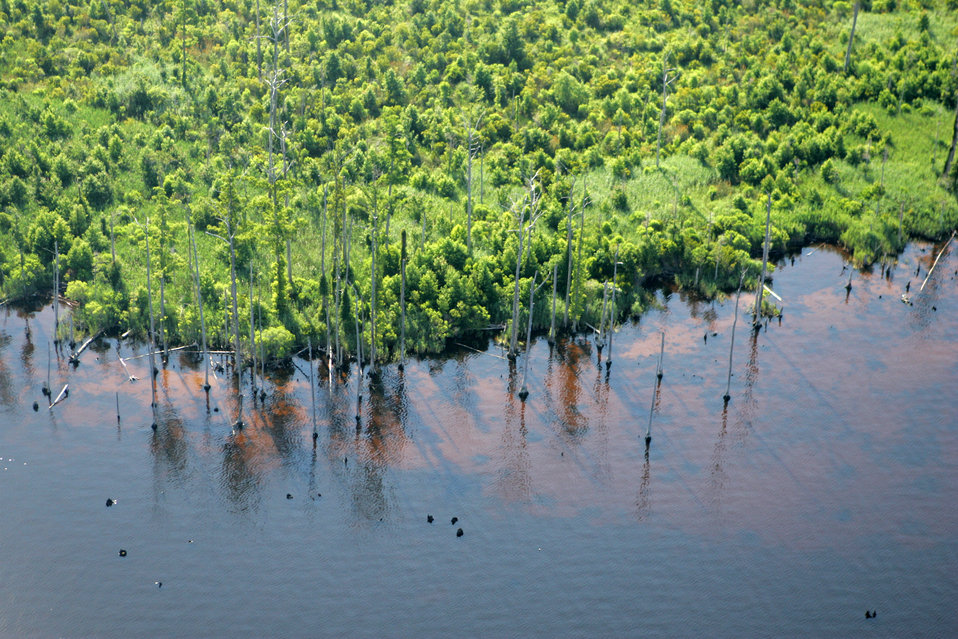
Aerial of too much water at Alligator River

Too much water from the Alligator River on the west side of the Alligator River National Wildlife Refuge is slowly killing off bald cypress and black gum trees.